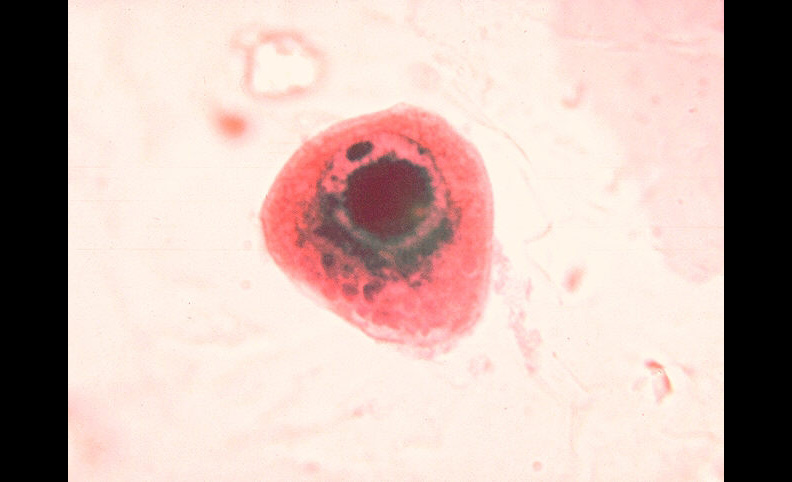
Cytomegalovirus infection of cell in urine.